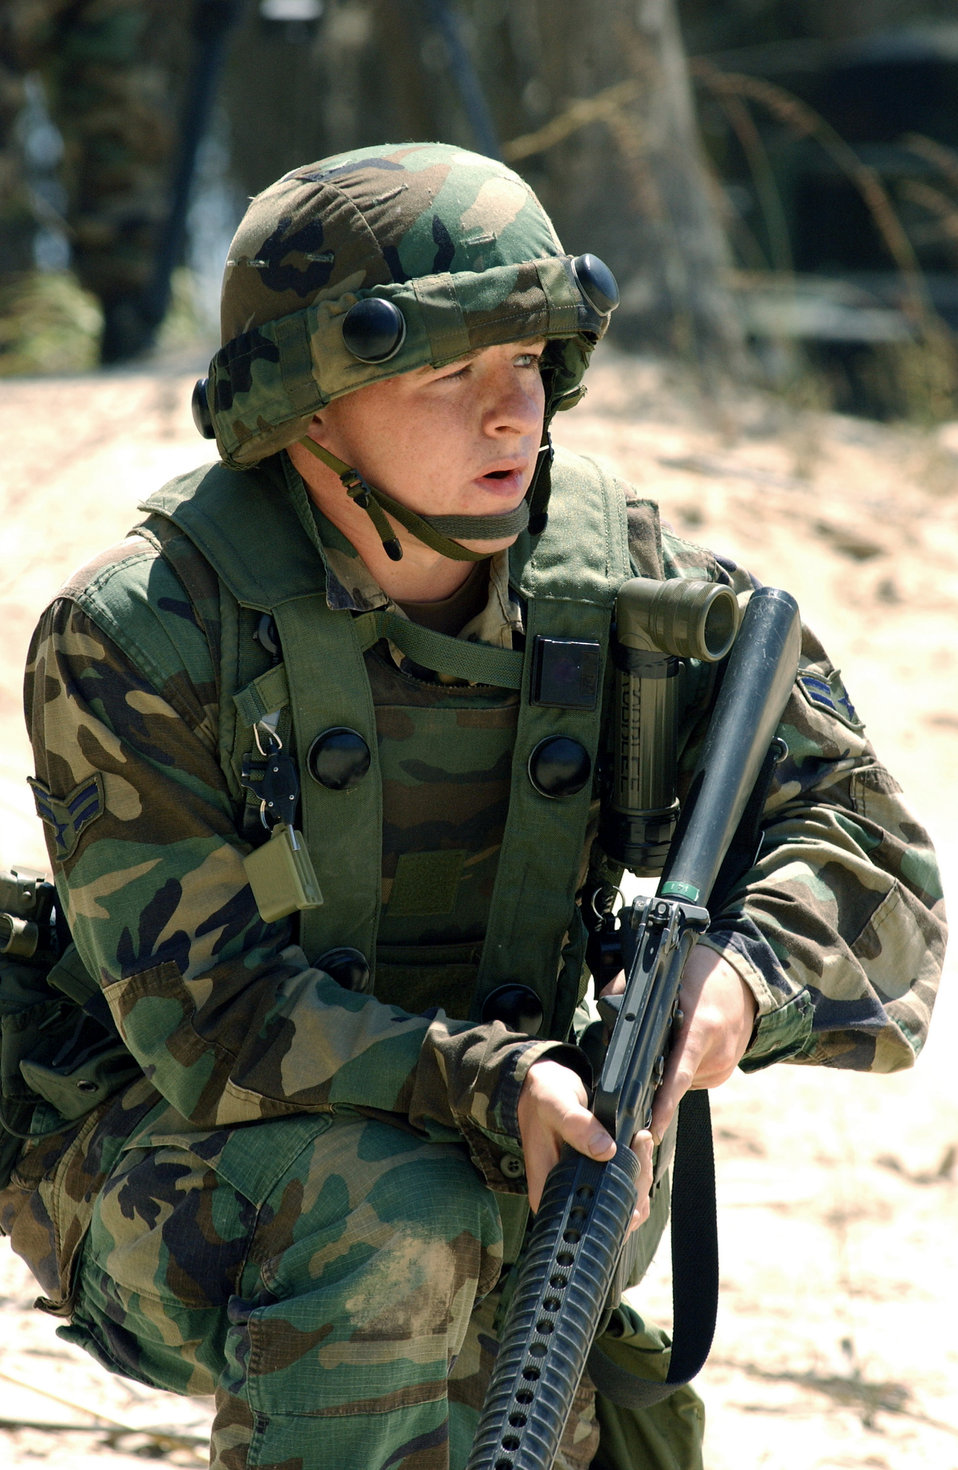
On the look out

VANDENBERG AIR FORCE BASE, Calif. -- Airman 1st Class Benner looks out for aggressors during the security forces tactics competition for Guardian Challenge here May 4. Guardian Challenge, the world's premier space and missile competition, is a four-day event held annually. It tests the wartime readiness of Air Force Space Command's Airmen in spacelift, ICBM operations, communications, maintenance, helicopter operations, security forces and chef food preparation. Airman Benner is assigned to the 460th Air Base Wing, Buckley Air Force Base, Colo.